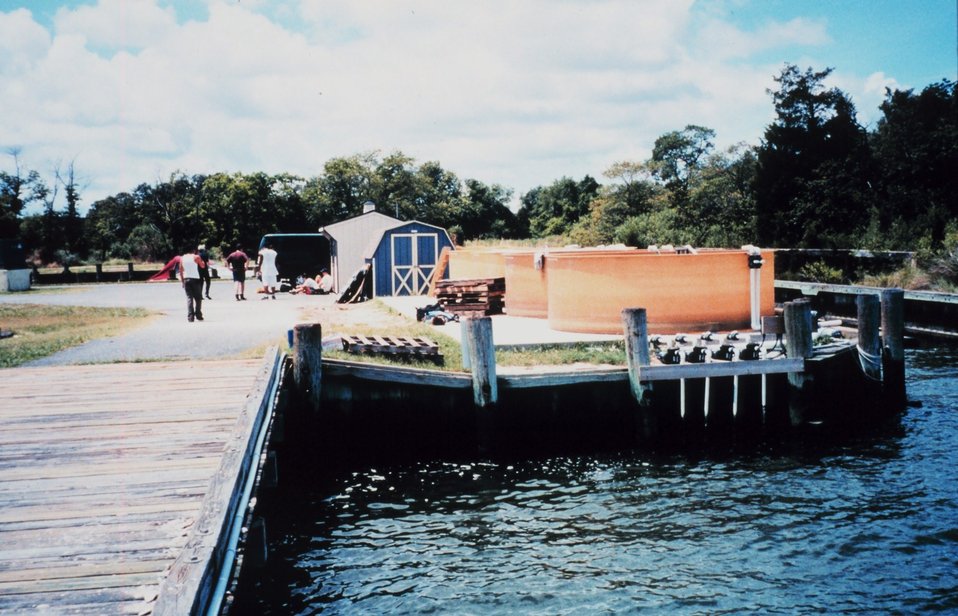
Oyster setting tanks at the University of Maryland Horn Point Environmental Laboratory on the Choptank River. Used by the Oyster Recovery Partnership, oyster larvae are placed in these tanks for two days, allowing them to set on shells where they stay and continue to grow for the rest of their lives.